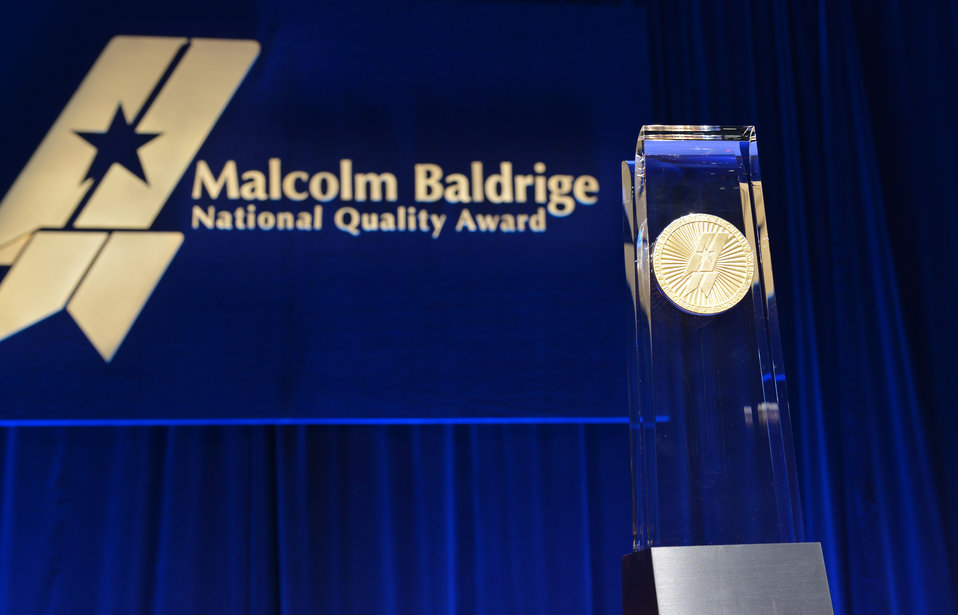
Baldrige Award Crystal with MBNQA backdrop, 2013 Baldrige Award Ceremony, April 6, 2014

Baldrige Award crystal with Malcolm Baldrige National Quality Award backdrop at the 2013 Baldrige Award Ceremony, April 6, 2014